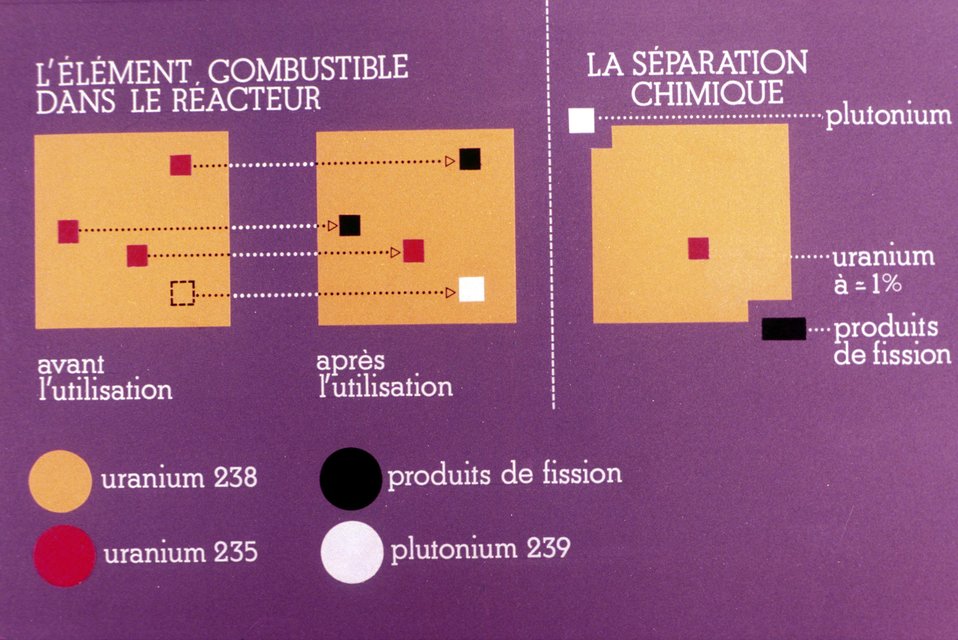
Cycle du combustible, 2e partie : le retraitement.